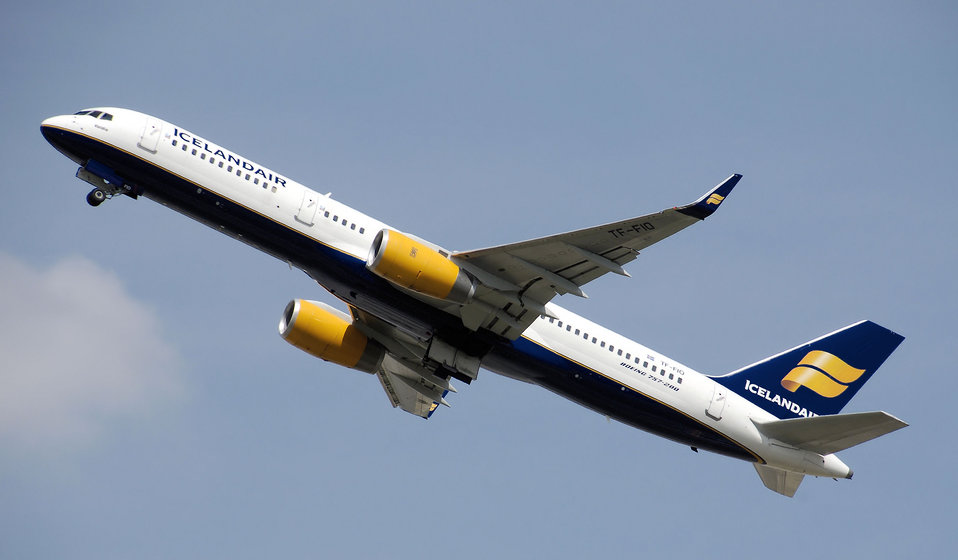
Icelandair.b757-200.tf-fio.arp